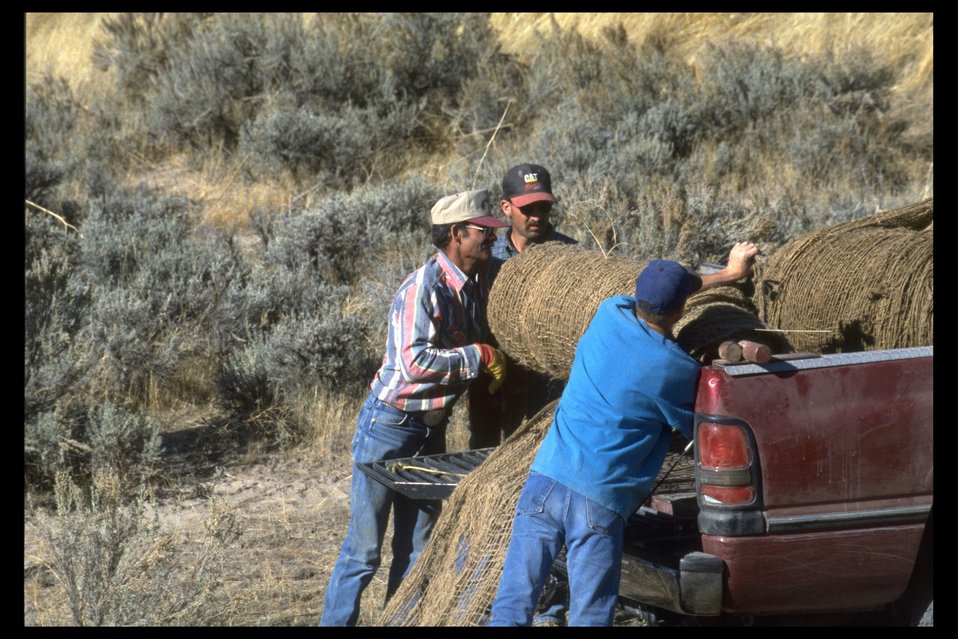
Constructing the horse trap wing in the South Steens HMA.